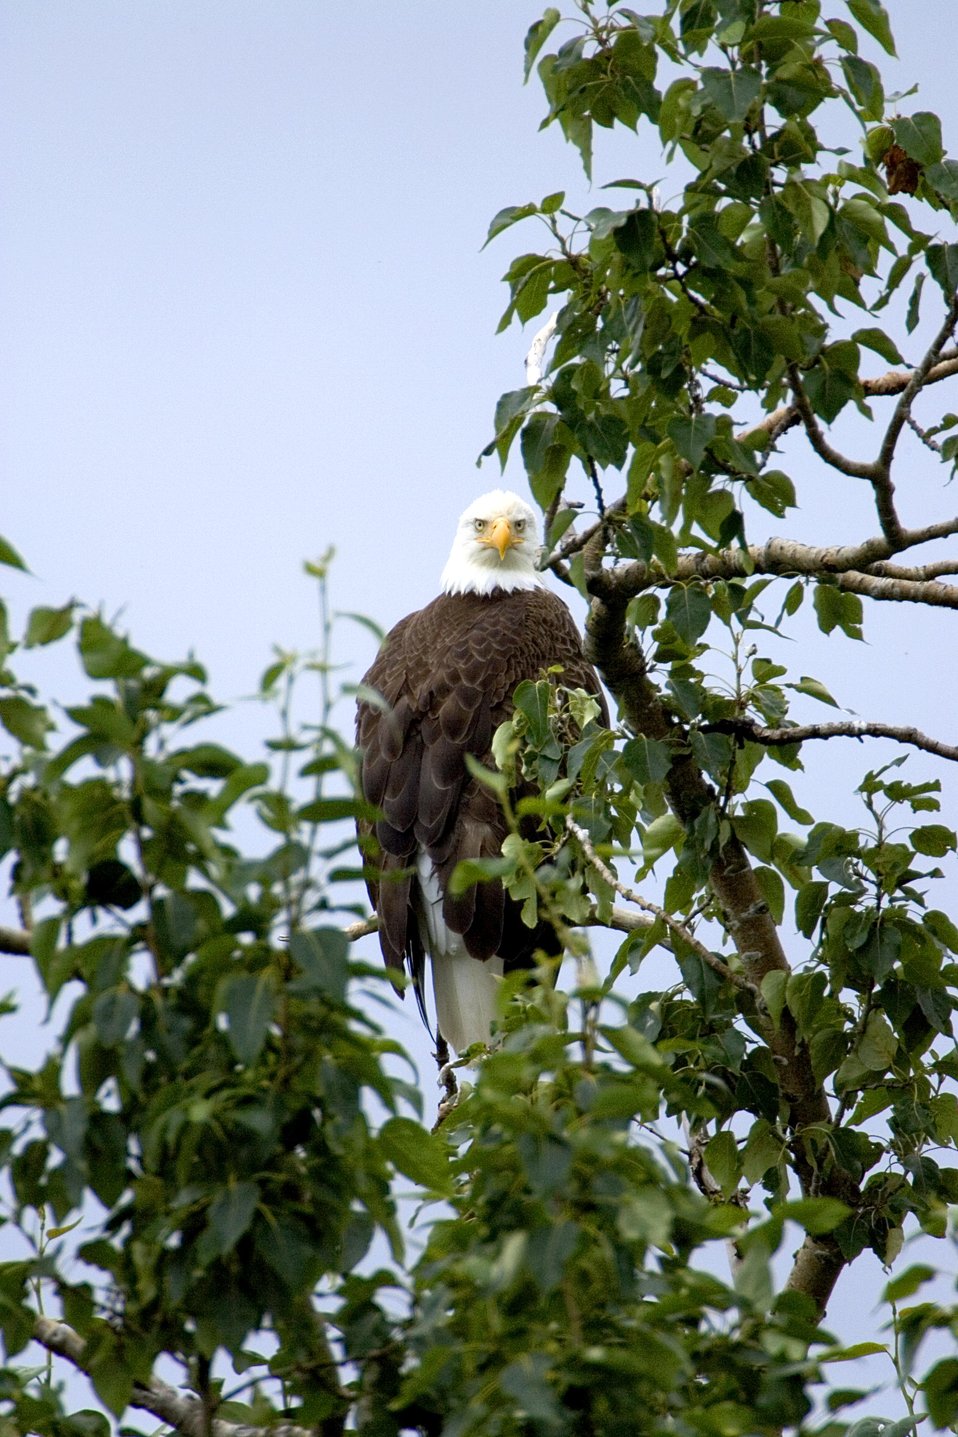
KOD Hildebrand (4)

Kodiak National Wildlife Refuge- Wildlife